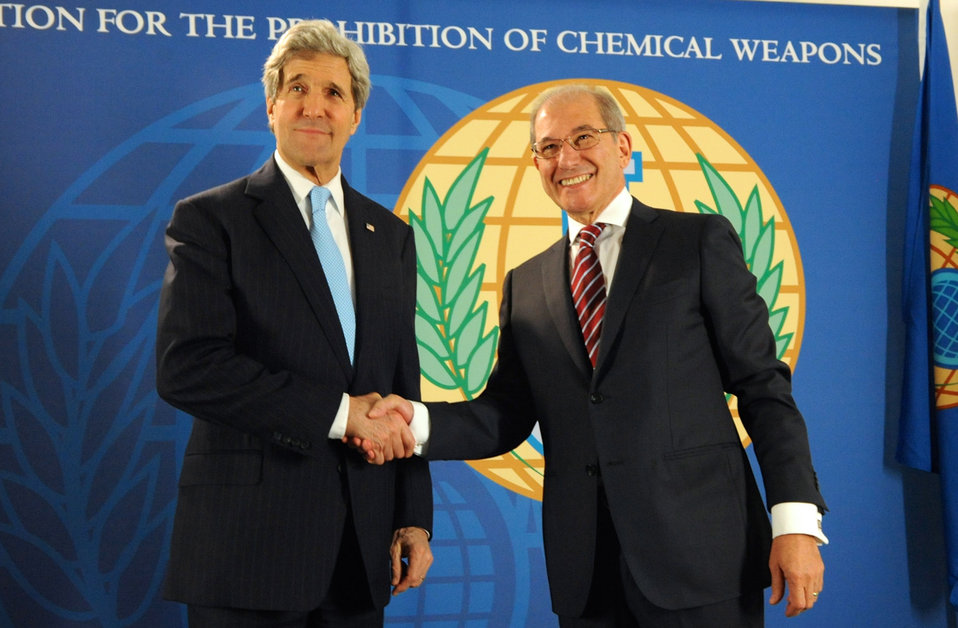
Secretary Kerry Shakes Hands With OPCW Director-General Uzumcu

U.S. Secretary of State John Kerry shakes hands with Organization for the Prohibition of Chemical Weapons Director-General Ahmet Uzumcu before a meeting at The Hague, the Netherlands, on March 24, 2014.